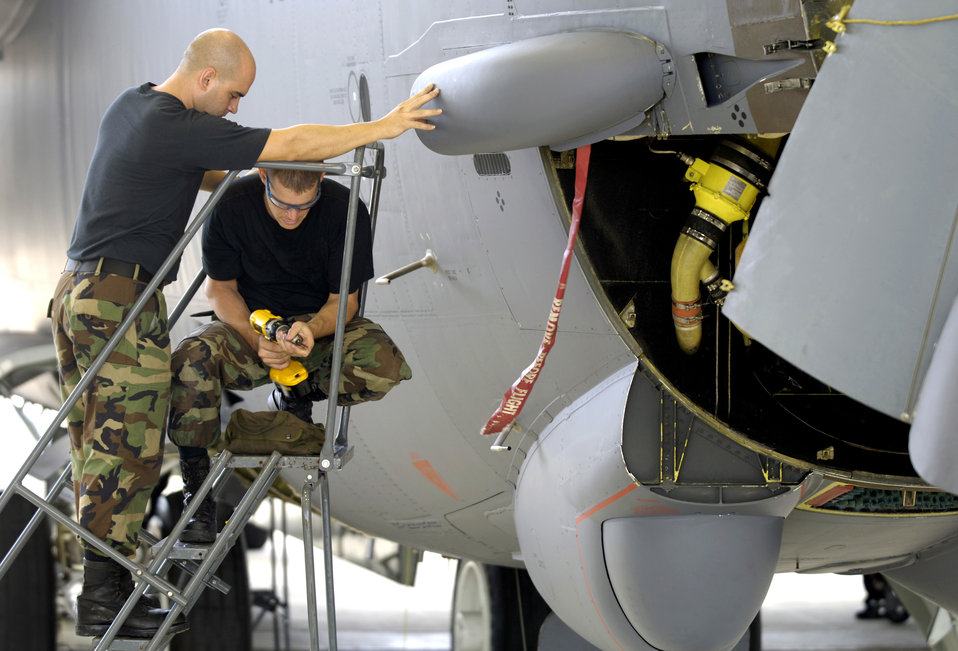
Phase maintenance

ANDERSEN AIR FORCE BASE, Guam -- Staff Sgt. Joshua Cormier and Senior Airman Merritt Shaw perform phase maintenance on a B-52 Startofortress at Hangar 1. Sergeant Cormier and Airman Shaw are deployed to Andersen.